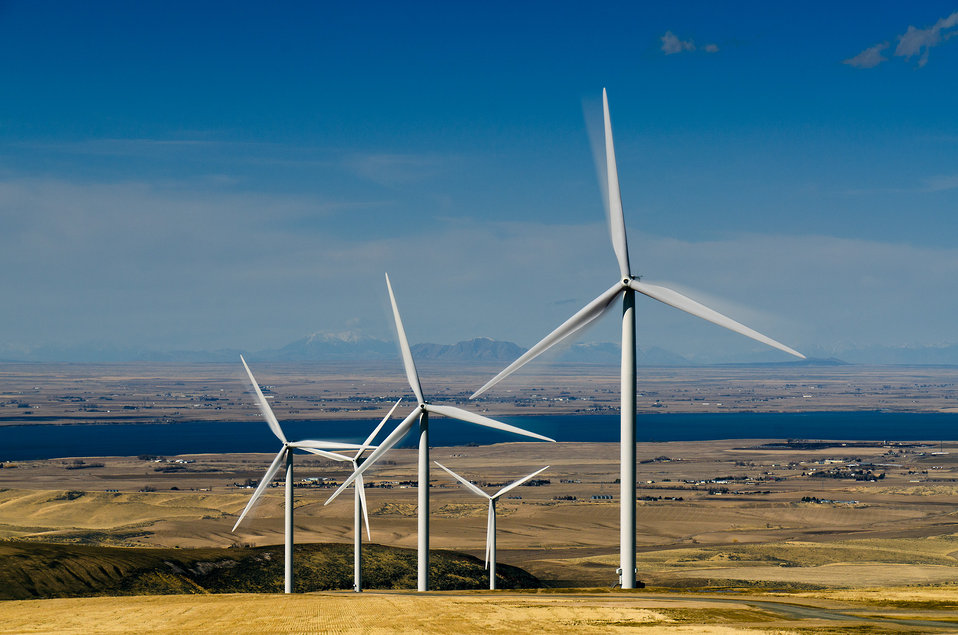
Power County Wind Farm - Power County, Idaho.